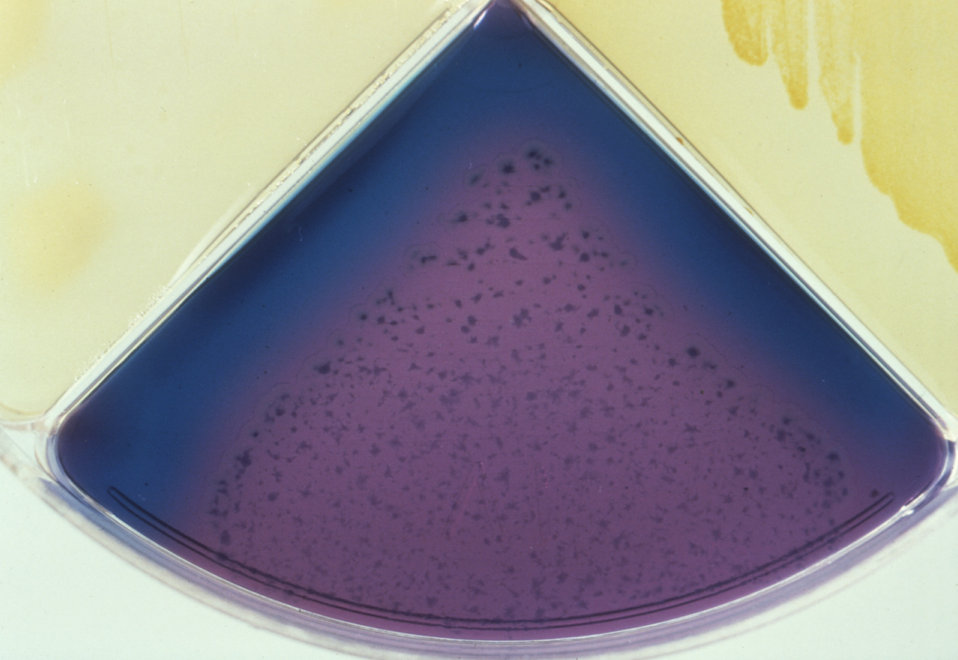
This Presumpto II quadrant plate developed by the CDC's Anaerobe Section, is showing a positive deoxyribonuclease reaction.